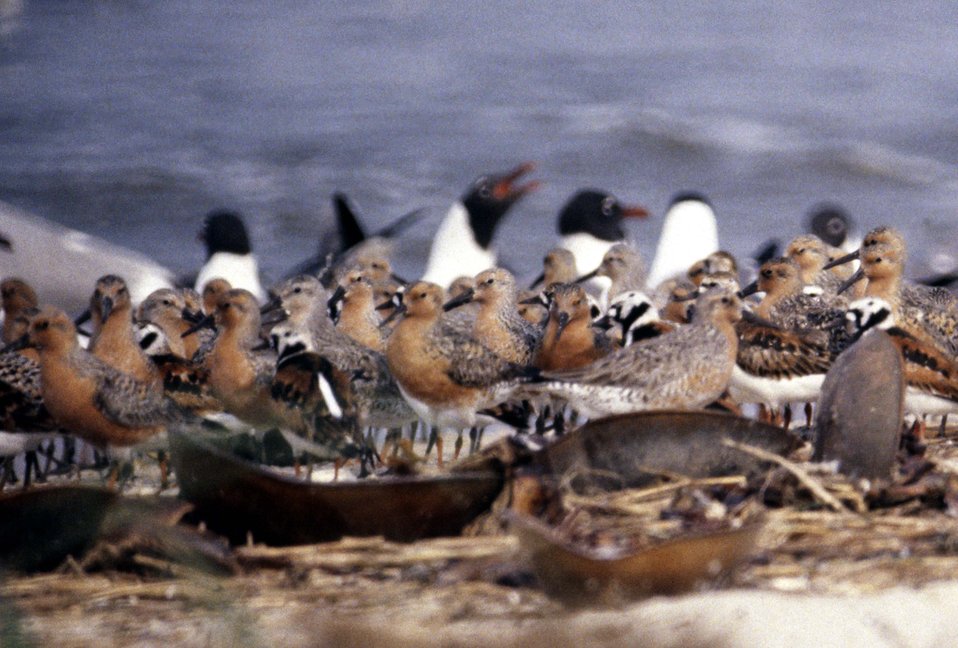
Gulls, Red Knots and Ruddy Turnstones

Reed's Beach, NJ.